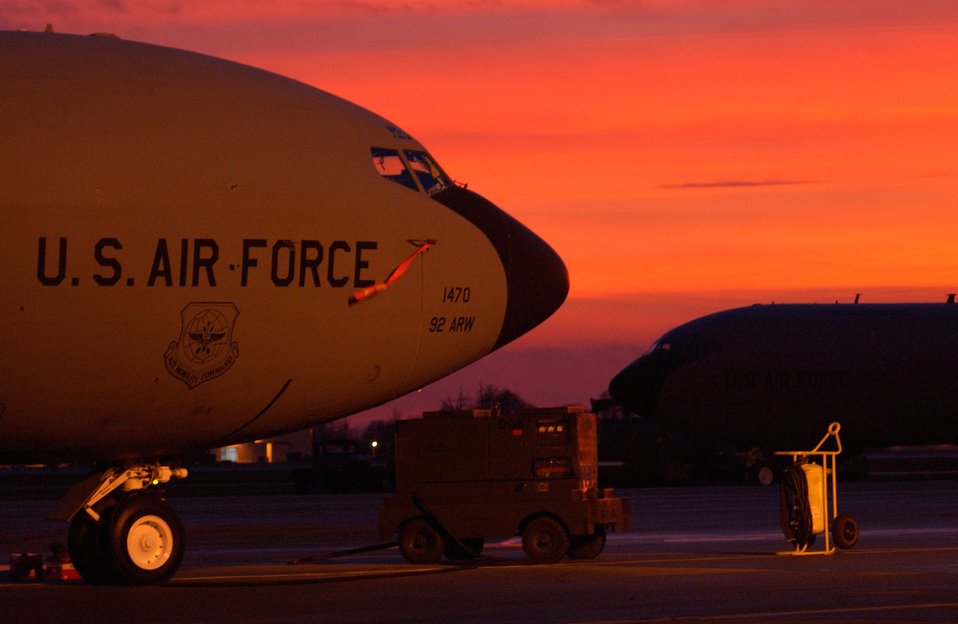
Tanker sunset

ROYAL AIR FORCE MILDENHALL, England (AFPN) -- A KC-135 Stratotanker sits on the flightline during a recent sunset. The KC-135 is deployed here from Fairchild Air Force Base, Wash. and provides aerial refueling support to Air Force, Navy and Marine Corps aircraft as well as aircraft of allied nations.